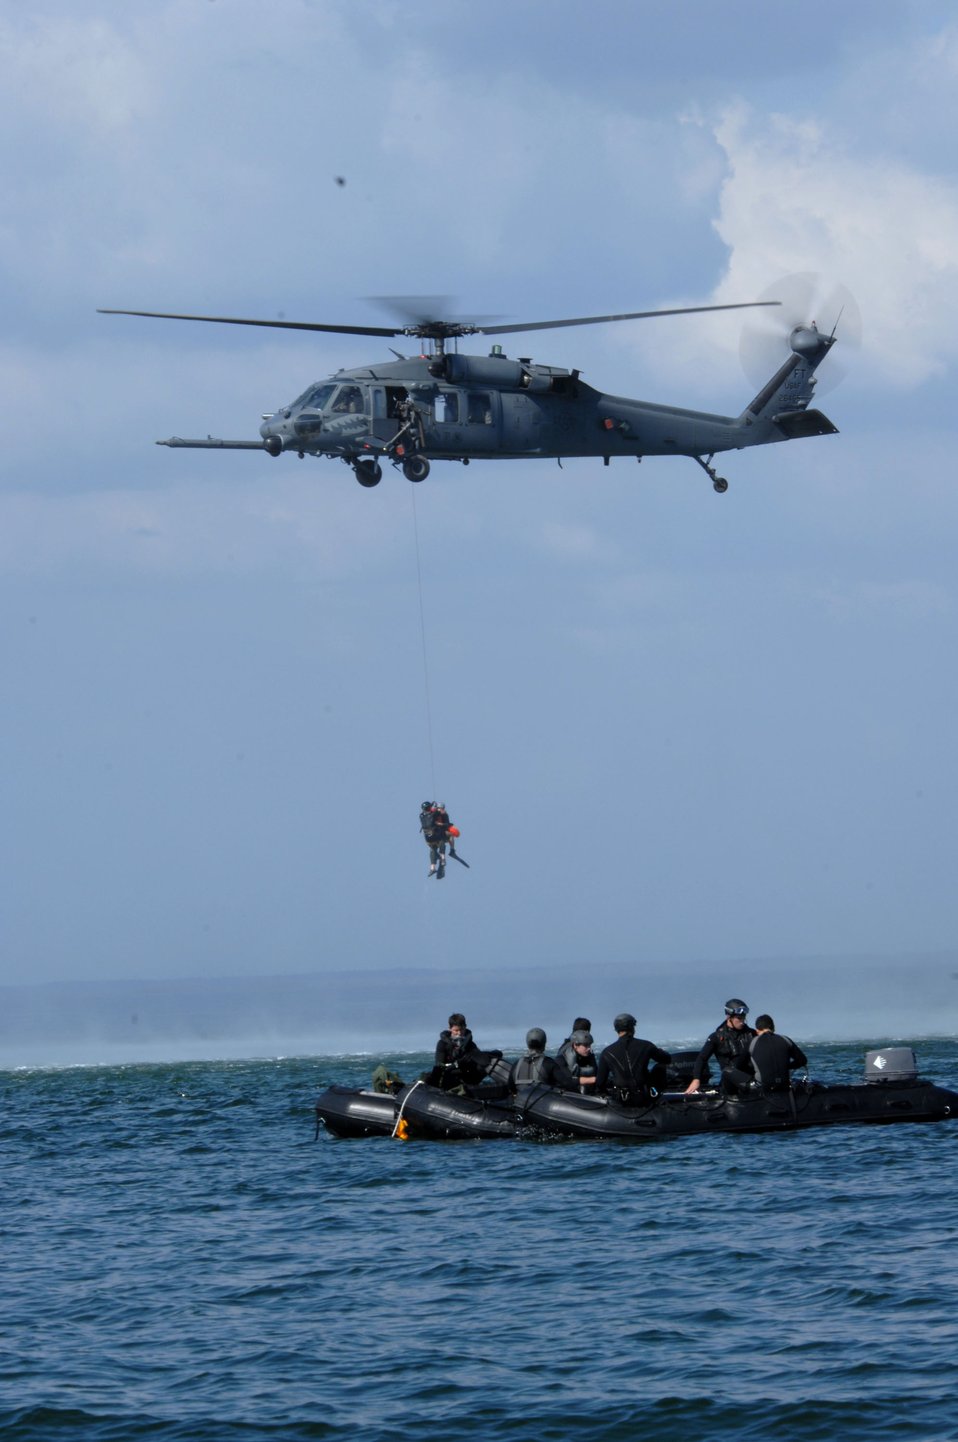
Commando Angel preps pararescuemen

Pararescuemen from the 38th Rescue Squadron are hoisted by an HH-60G Pave Hawk from the 41st RQS, during a dive recovery exercise March 22 in the Gulf of Mexico. The 38th and 41st RQS from Moody Air Force Base, Ga., are taking part in the base's operational readiness exercise, Commando Angel.